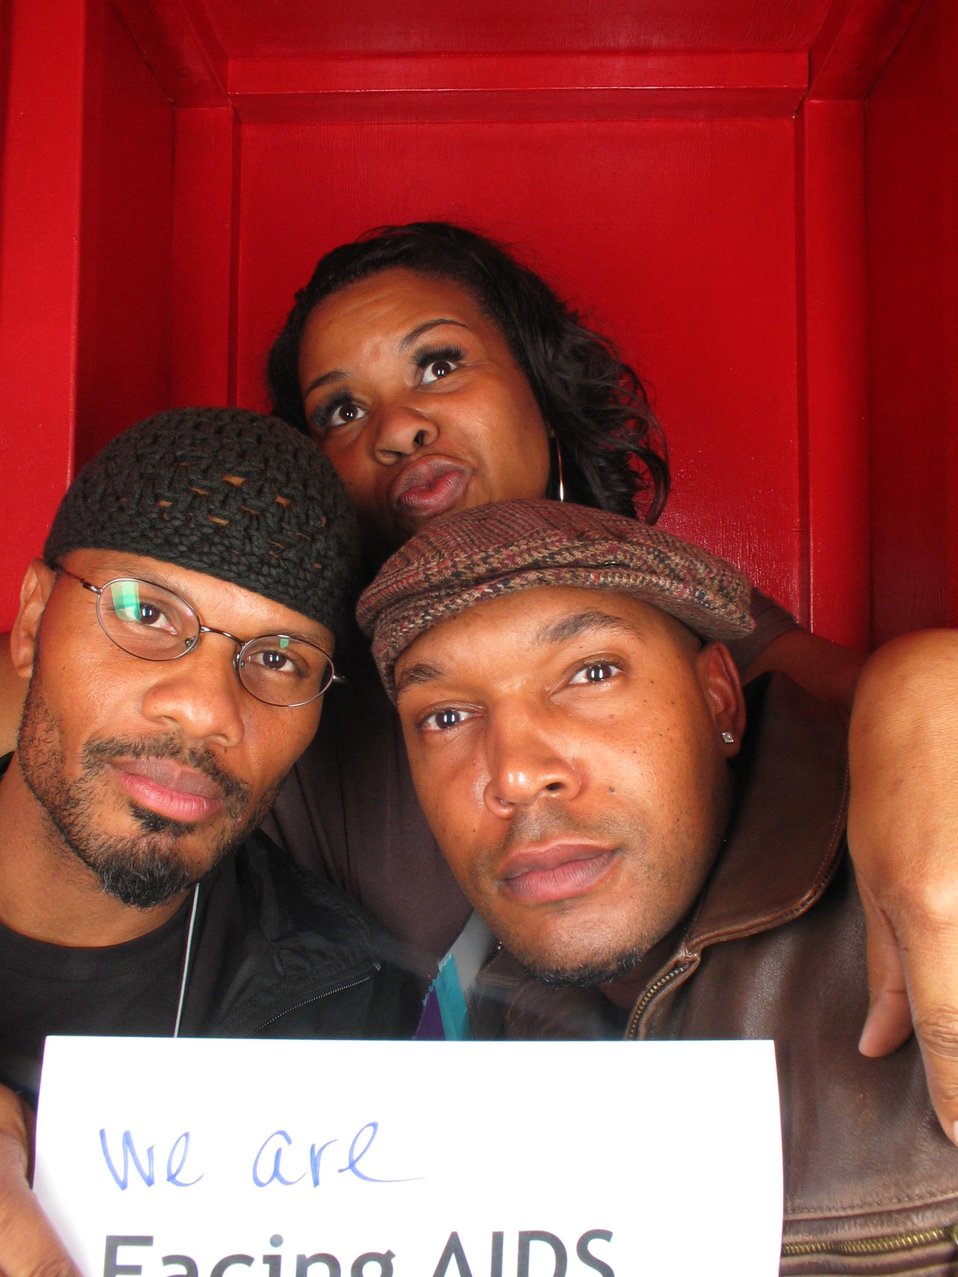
We are Facing AIDS